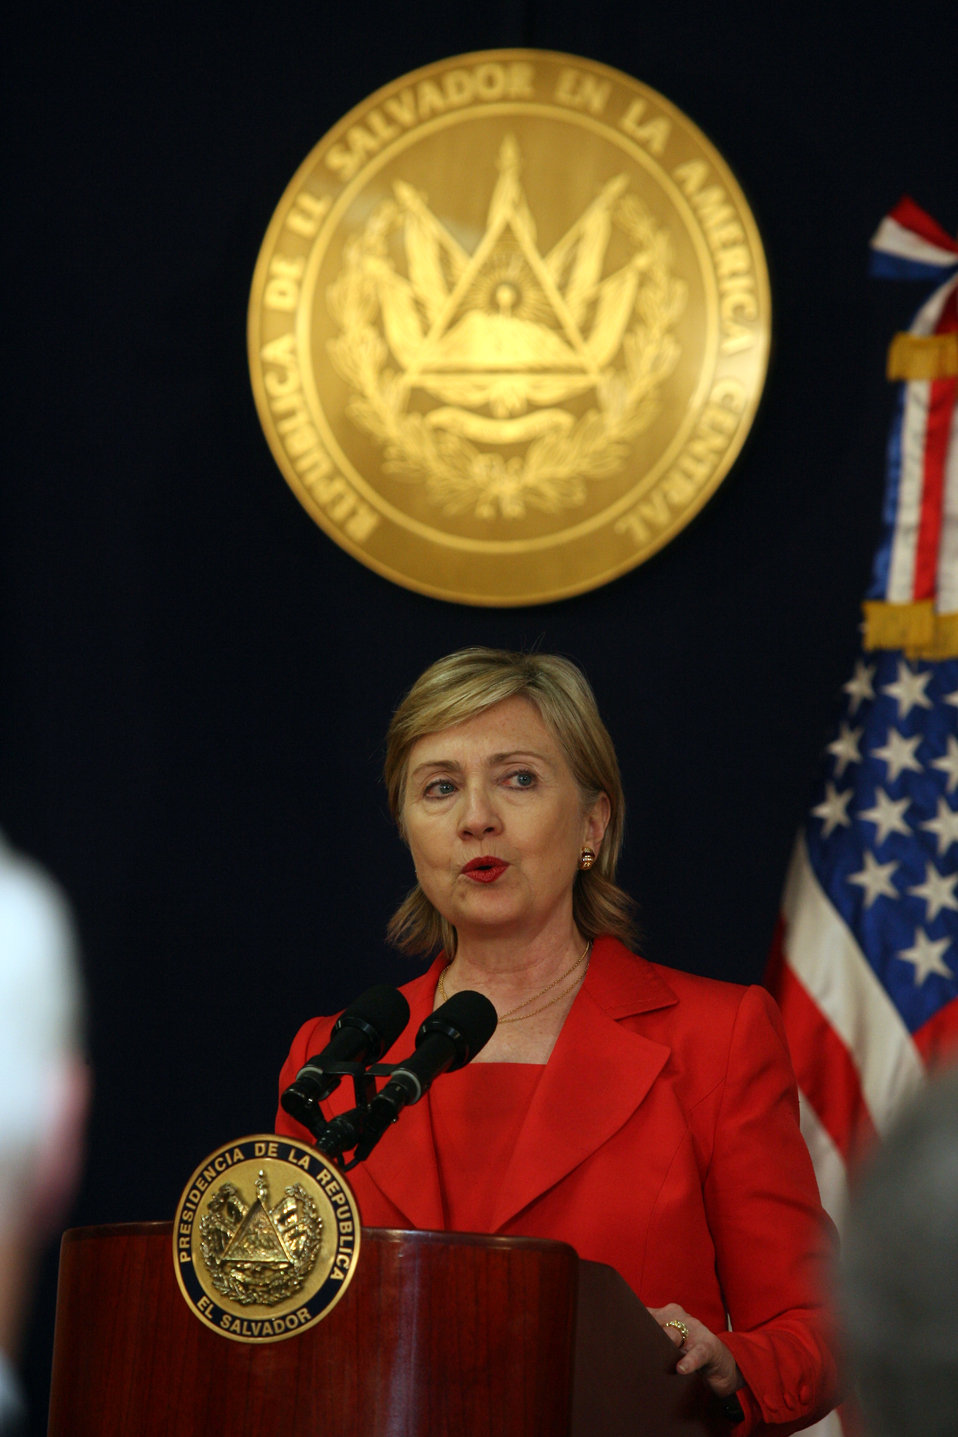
Joint Press Conference in El Salvador With Secretary Clinton and Salvadoran President

U.S. Secretary of State Hillary Rodham Clinton offers remarks during a press conference held in the Presidential Palace in San Salvador, El Salvador June 1, 2009.